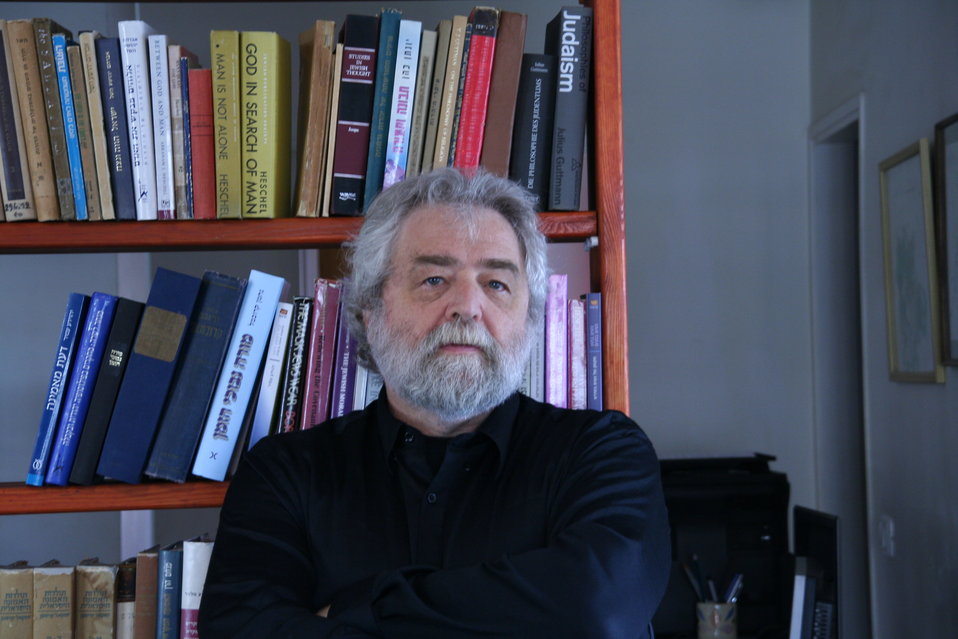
עברית: תמונה שלי